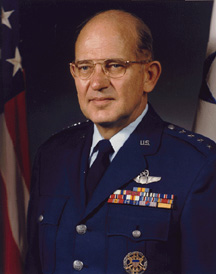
General Lew Allen Jr.

1970's -- Lew Allen Jr.'s appointment as Air Force chief of staff was entirely unexpected because he had followed an unusual career path: he never had an overseas or a combat assignment, and most of his jobs were in highly specialized activities rather than in the basic line of the Air Force. Characteristically, Allen looked forward to the challenge.